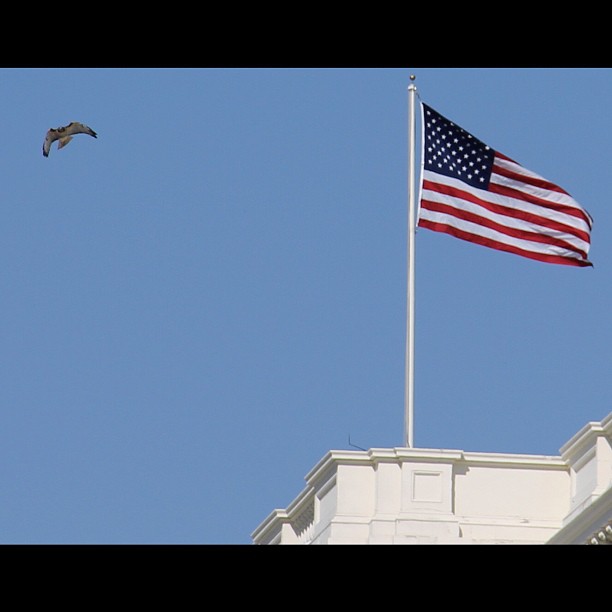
Red-tailed hawk enjoys blue skies and warm October afternoon at Capitol.